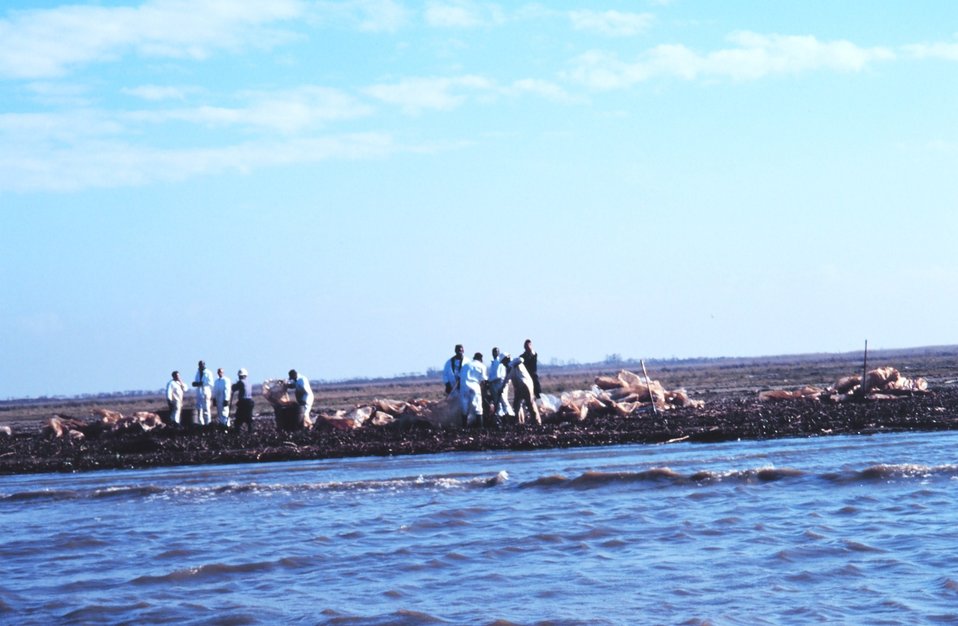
Cleanup of a sandy spit adjacent to Southwest Pass levee following oil spill. This area is used extensively as cattle pasture despite its inaccessibility from land. Cattle are brought in by barge.